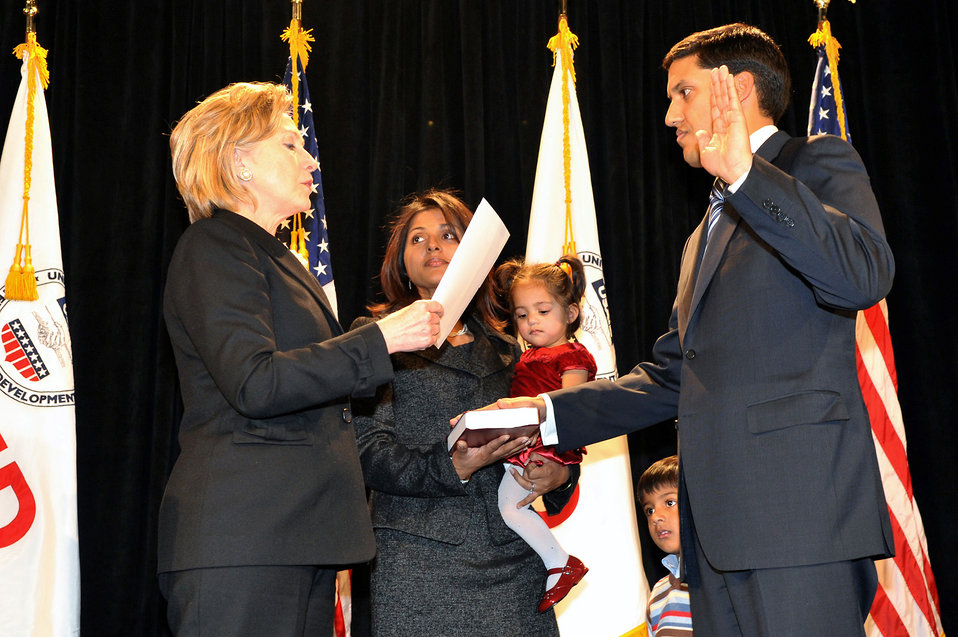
Secretary Clinton Swears-In New USAID Administrator

U.S. Secretary of State Hillary Rodham Clinton during the swearing-in ceremony for new USAID Coordinator Rajiv Shah in Washington, DC January 7, 2010.